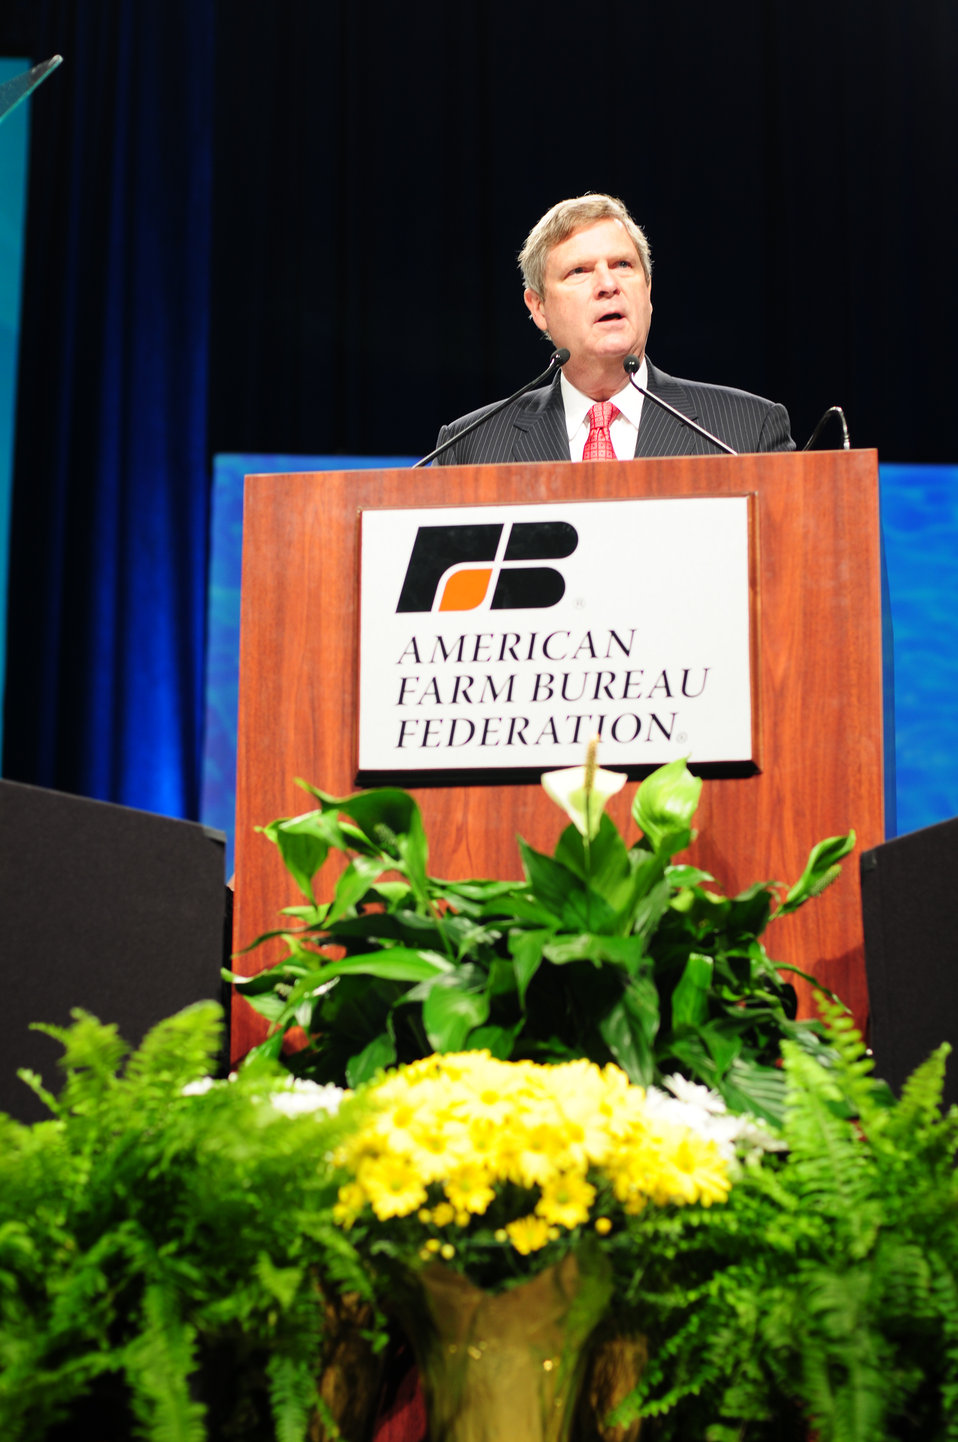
Agriculture Secretary Tom Vilsack speaks at the American Farm Bureau Annual Meeting Closing Ceremony at the Convention Center in Waikiki, Hawaii, on Sunday, January 9, 2012.